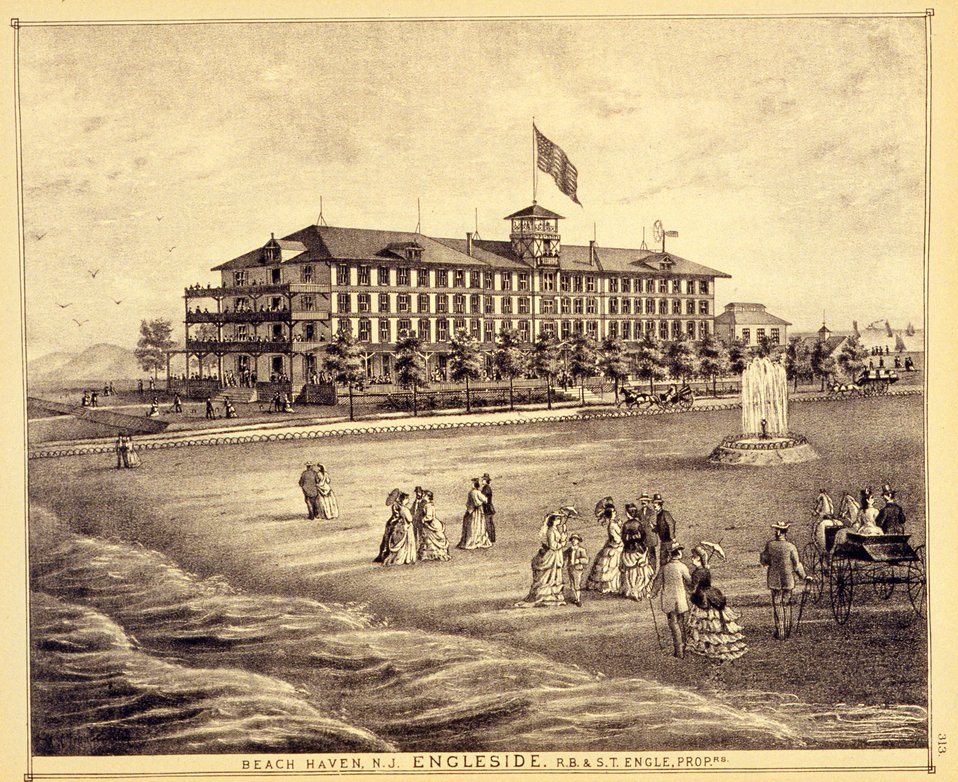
Beach Haven, Engleside, N.J. P. 313. 'Historical and Biographical Atlas of the New Jersey Coast,' by T. F. Rose, 1878.